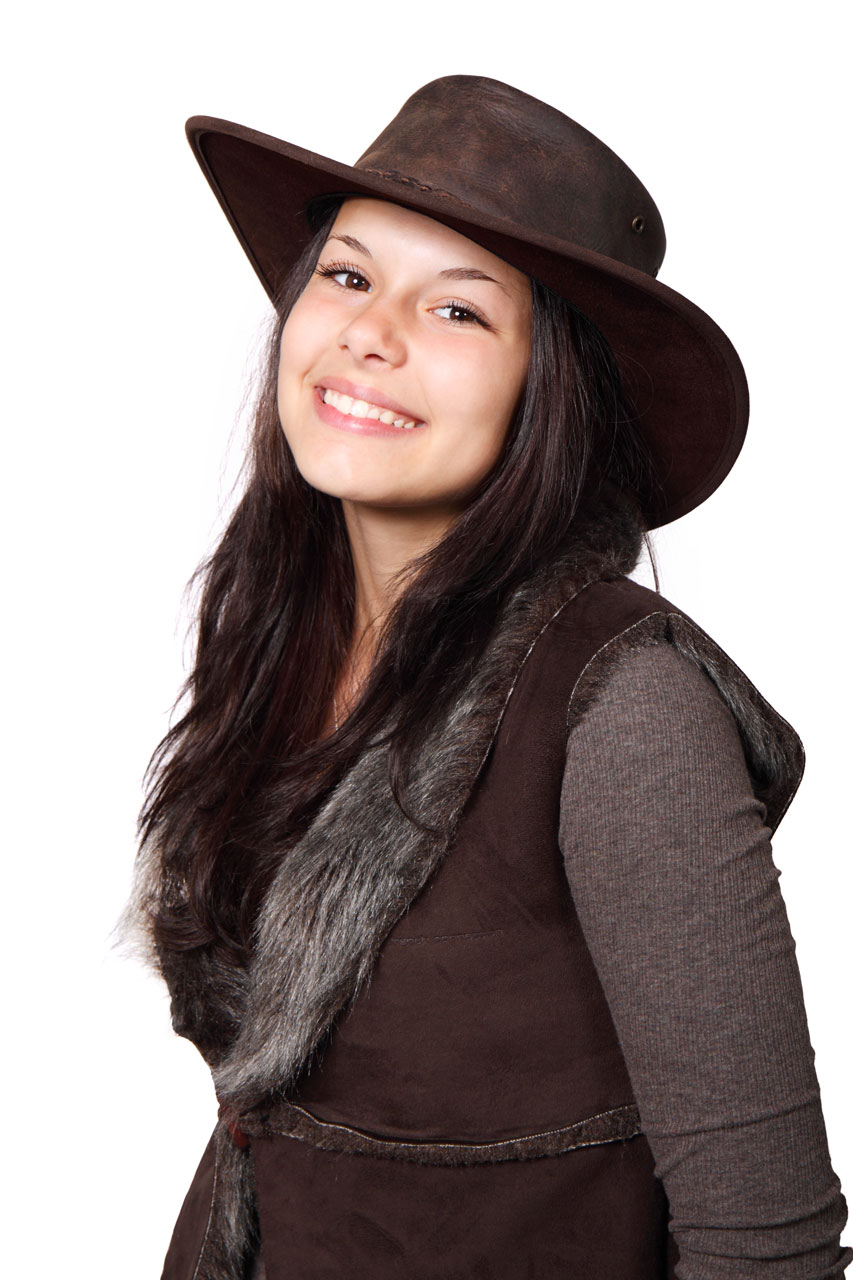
Country woman with hat isolated on white background.